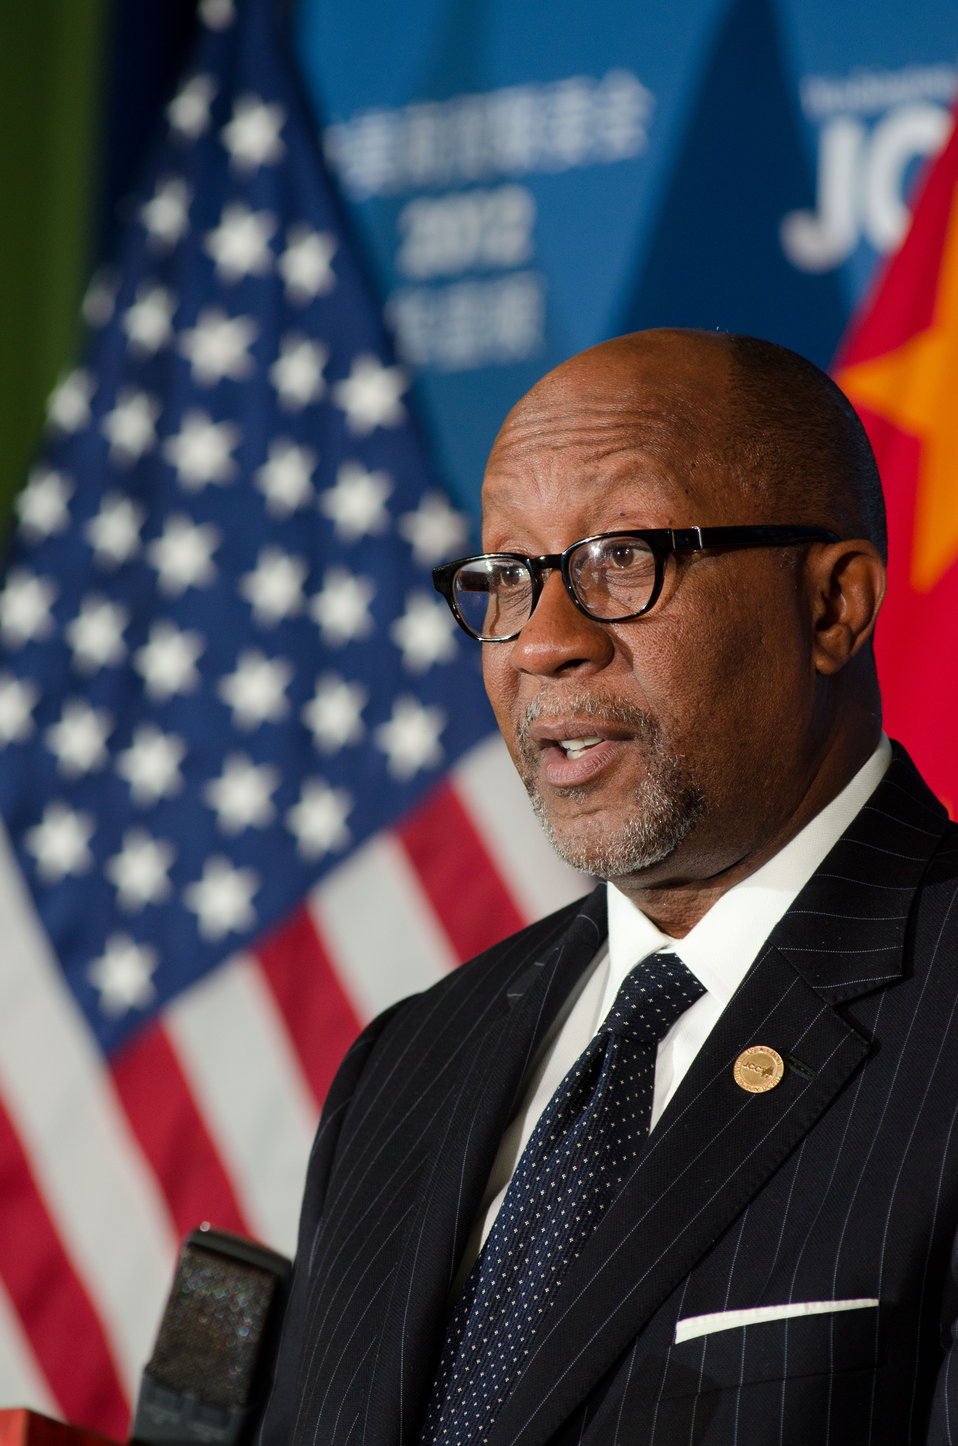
U.S. Trade Representative Ron Kirk responds to a question from an international news media journalist at the 23rd Session of the U.S. China Joint Commission on Commerce and Trade (JCCT) at the Andrew W. Mellon Auditorium in Washington, D.C. on Wednesday, Dec. 19, 2012. The JCCT holds high-level plenary meetings on an annual basis to review progress made by working groups that focus on a wide variety of trade issues. These working groups meet throughout the year to address topics such as intellectual property rights, agriculture, pharmaceuticals and medical devices, information technology, tourism, commercial law, environment, and statistics.